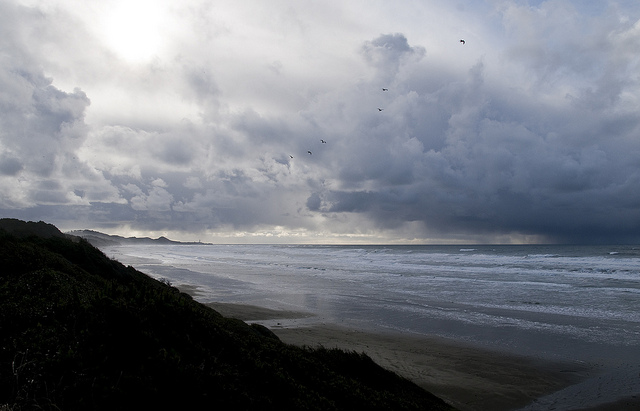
storm clouds

Oregon Coastal Islands National Wildlife Refuge, OR